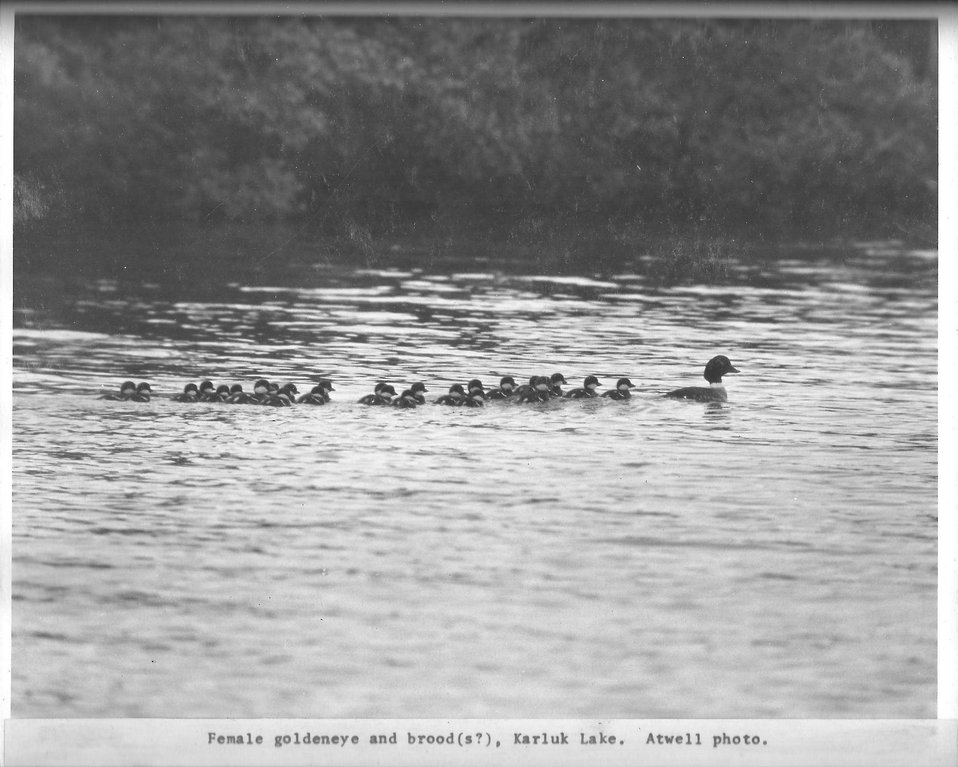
(1972) 1 Leader and 25 Little Followers

Credit: USFWS

Source and Contact: Kodiak National Wildlife Refuge